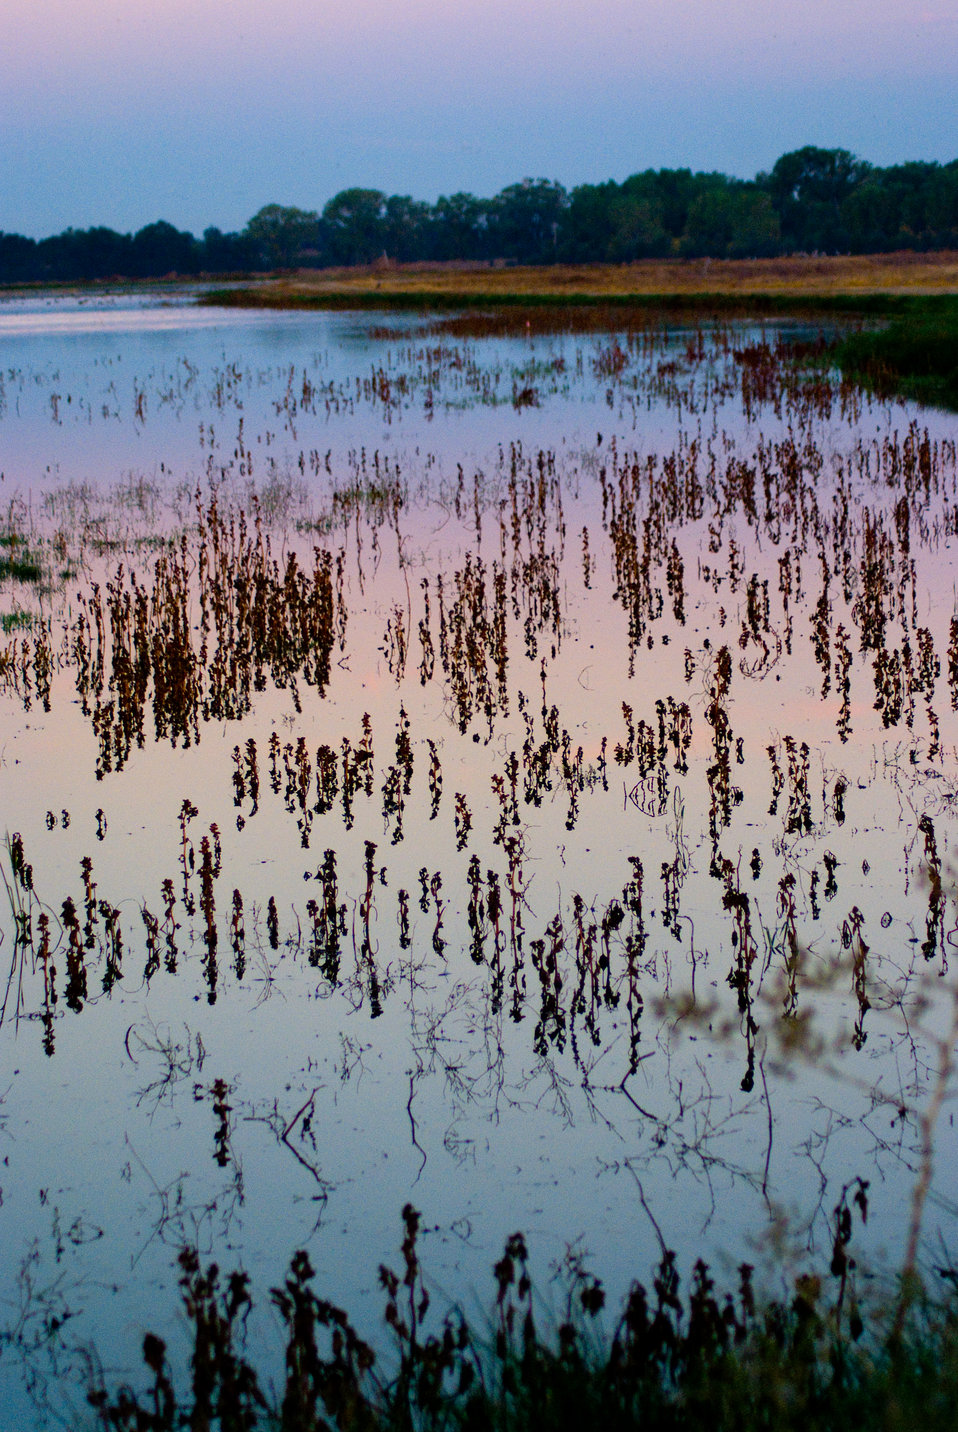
Stone Lakes National Wildlife Refuge, Elk Grove, CA